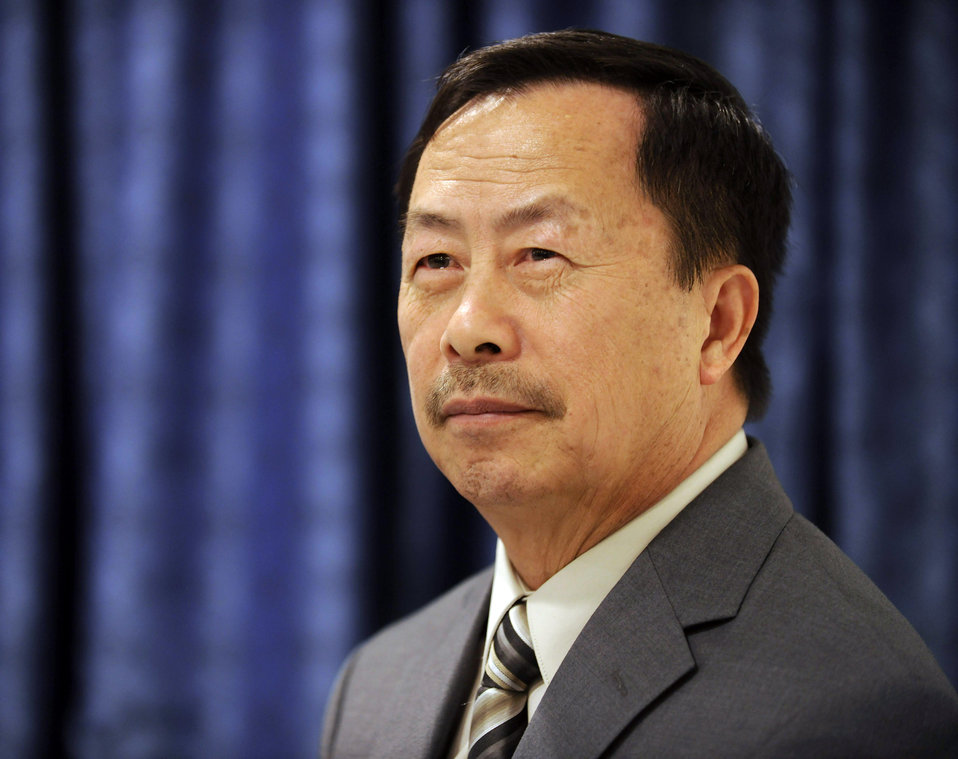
Hmong-American patriot recognized by Air Force chief of staff

Yia Kha listens as Air Force Chief of Staff Gen. Norton Schwartz says a few words during a ceremony March 31, 2010, in the Pentagon's Airmen's Hall. Mr. Kha received a certificate of appreciation from General Schwartz for his role in aiding forward air controllers during the Vietnam War.